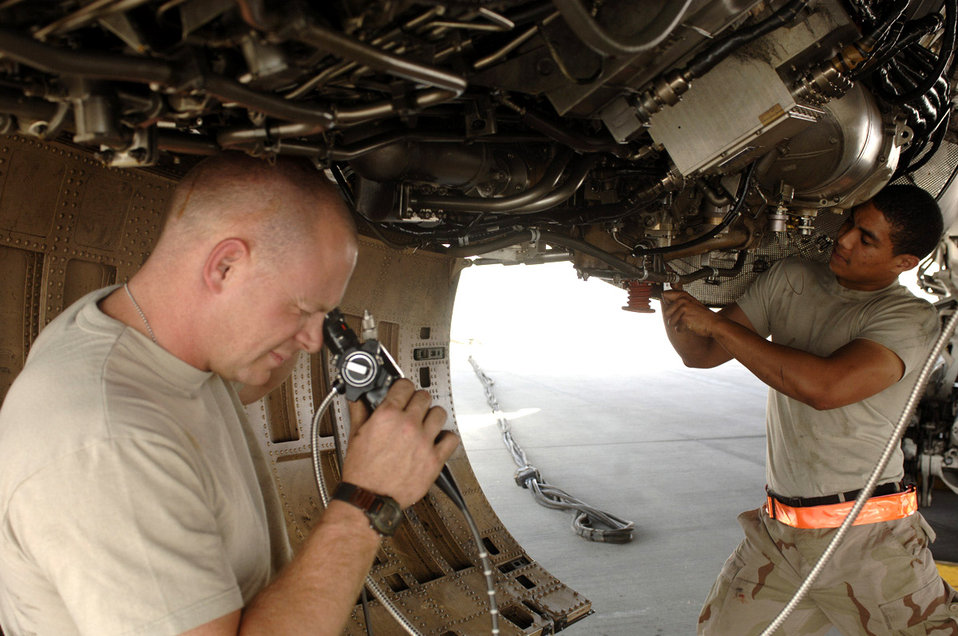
Airmen tackle increased operations tempo

Jet engine technicians, Staff Sgt. Shaun Bennet (left) and Senior Airman Maurice Williams, inspect a B-1B Lancer's internal compressor blades during an engine borescope inspection. This inspection is accomplished every 100 engine operating hours. The Airmen are assigned to the 379th Expeditionary Aircraft Maintenance Squadron's 34th Aircraft Maintenance Unit in support of Operation Iraqi Freedom and Operation Enduring Freedom in Afghanistan.